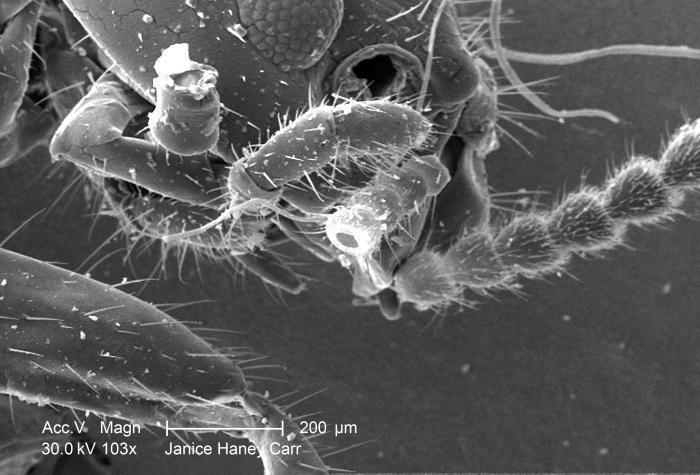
Under a reatively-low magnification of 103X, this scanning electron micrograph (SEM) revealed some of the ultrastructural morphology found on the head region of a termite, which had been discovered in the suburbs of Atlanta, Georgia.